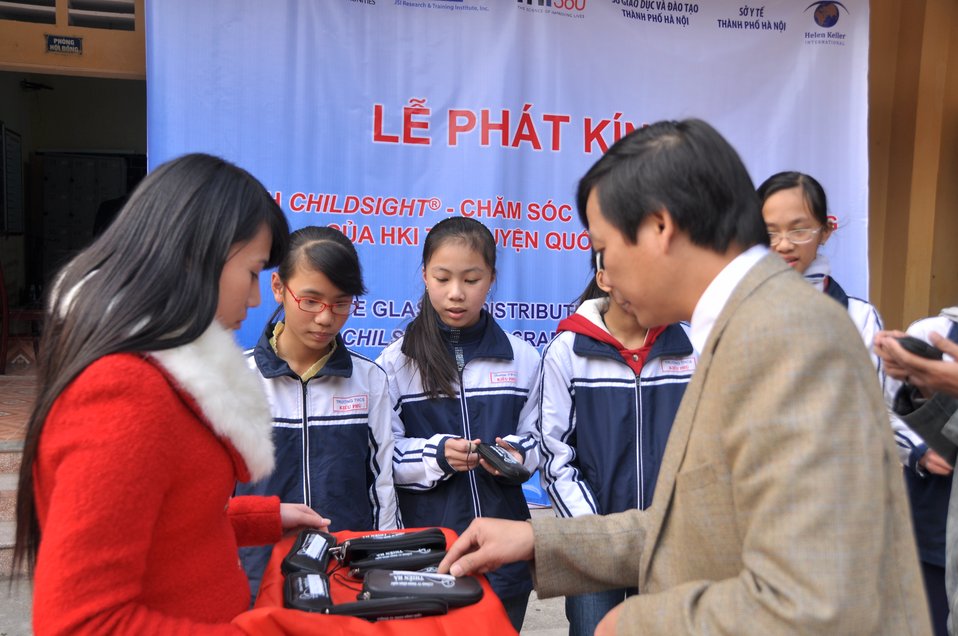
USAID supports distribution of eyeglasses to pupils and teachers in Quoc Oai, Hanoi.

Kieu Phu Junior Secondary School, Quoc Hoai, Hanoi, December 23, 2013.